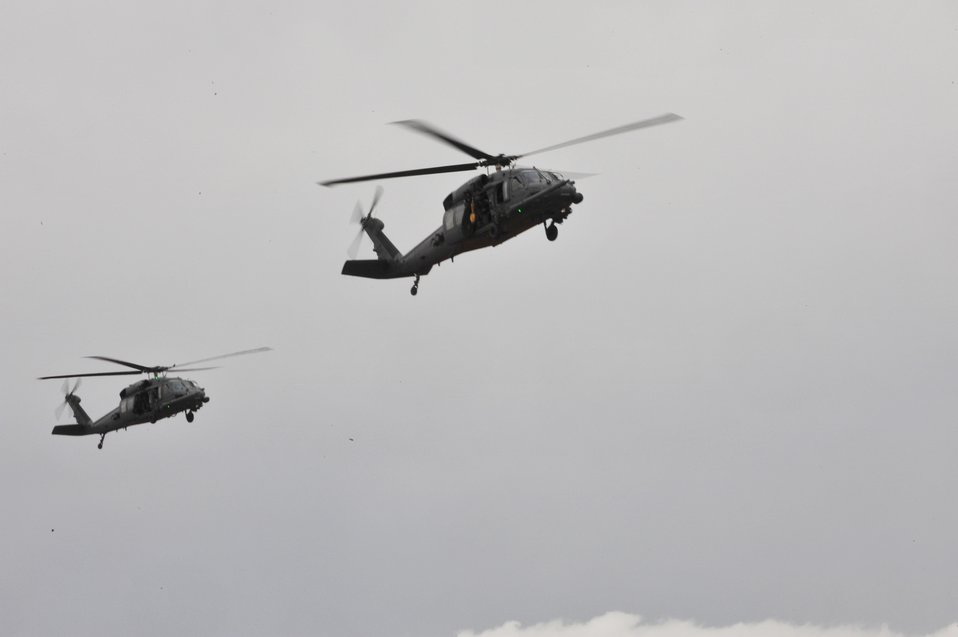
Helicopter crews train at Kirtland AFB

Two H-60G Pave Hawks fly in tactical formation and prepare to land near Kirtland Air Force Base, N.M., during a training flight Aug. 25, 2009.